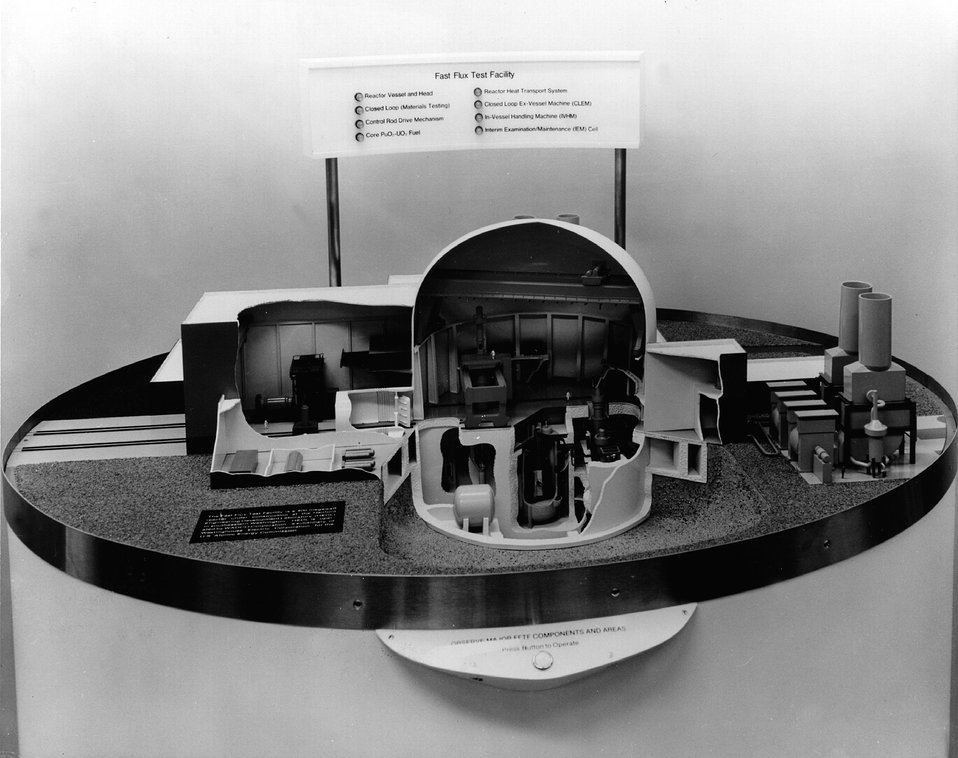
A model of the Fast Flux Test Facility under construction at the U.S. Atomic Energy Commission's Hanford Site. c.1972